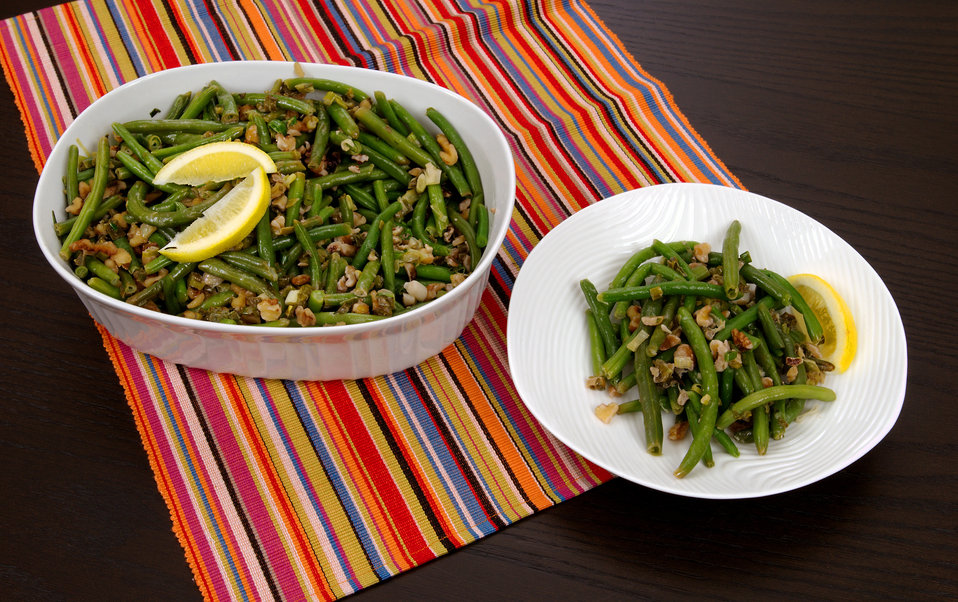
This image depicts a casserole dish filled with a freshly-cooked recipe of Lemon-Walnut Green Beans, which based on its ingredients, is a very healthy choice as a meal, side dish, or even a snack.